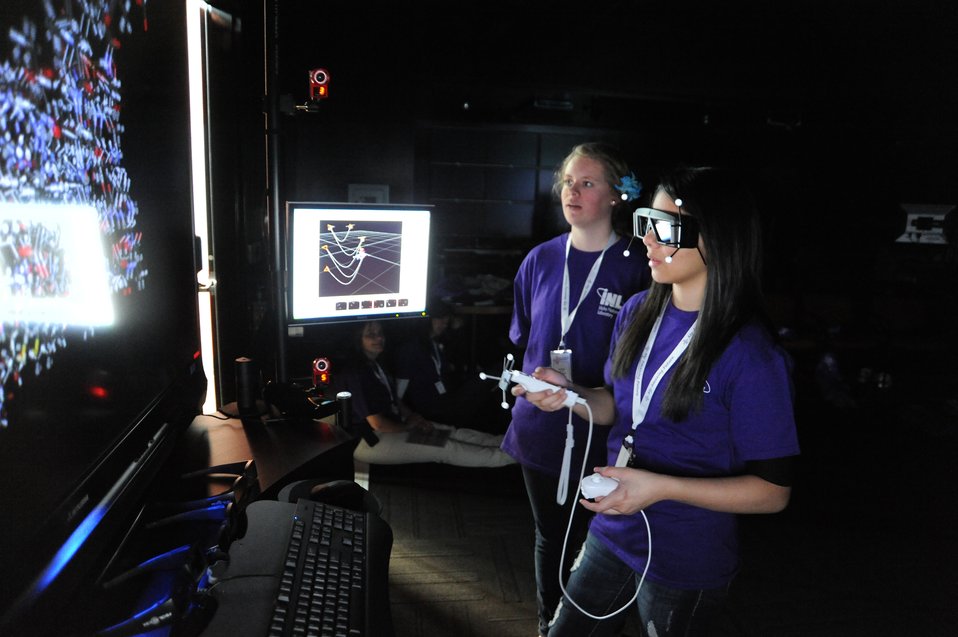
Idaho National Laboratory's annual, day-long My Amazing Future event shows career options to get students excited about science and technology.